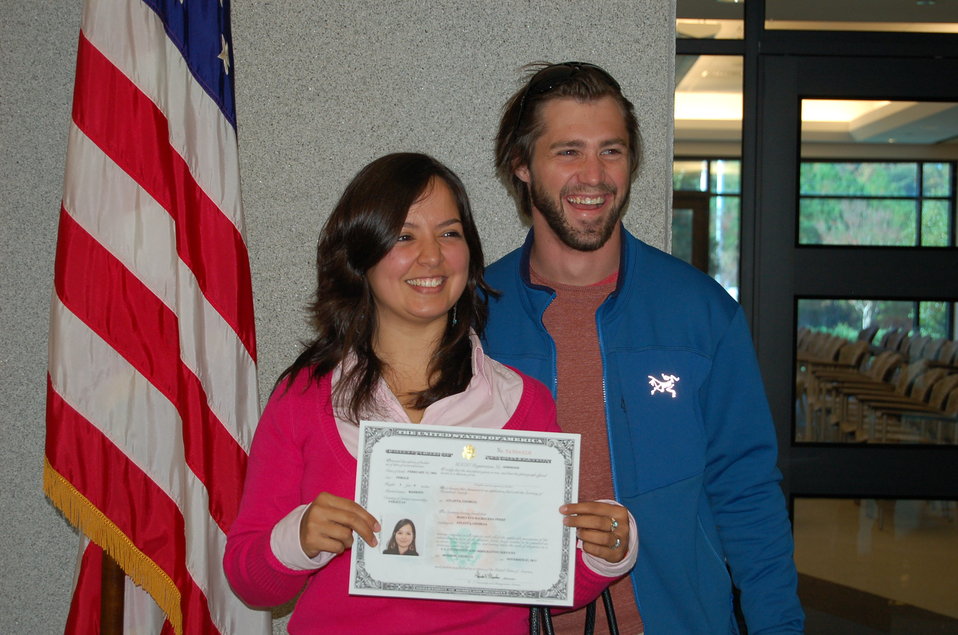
New Citizens